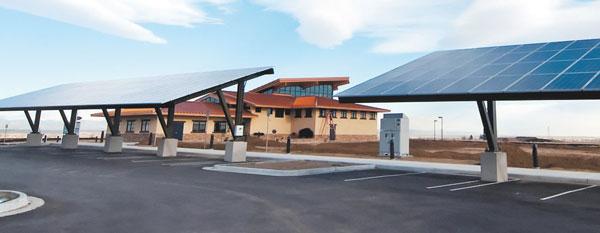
Rocky Mountain Arsenal solar panels

Large outdoor solar panels at the Visitor Center provide energy and serve as protective covering in the parking area, which was paved with recycled asphalt.